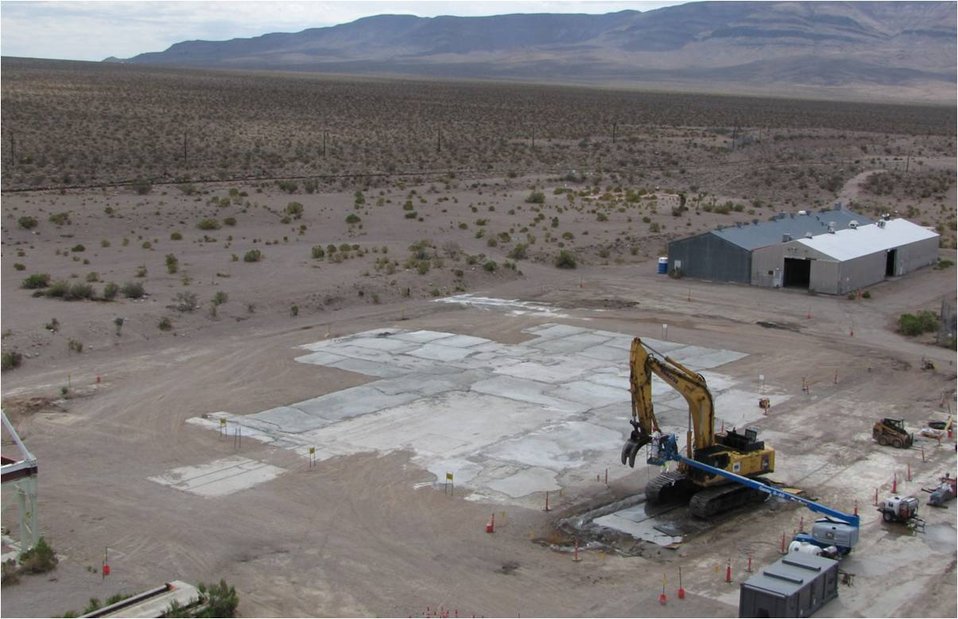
Recovery Act Kicks NNSS Cleanup into High Gear

The site of the former Reactor Maintenance, Assembly and Disassembly Facility, which supported nuclear rocket reactor development in the space program, is shown in the center of the photo here. Workers demolished the facility this year.